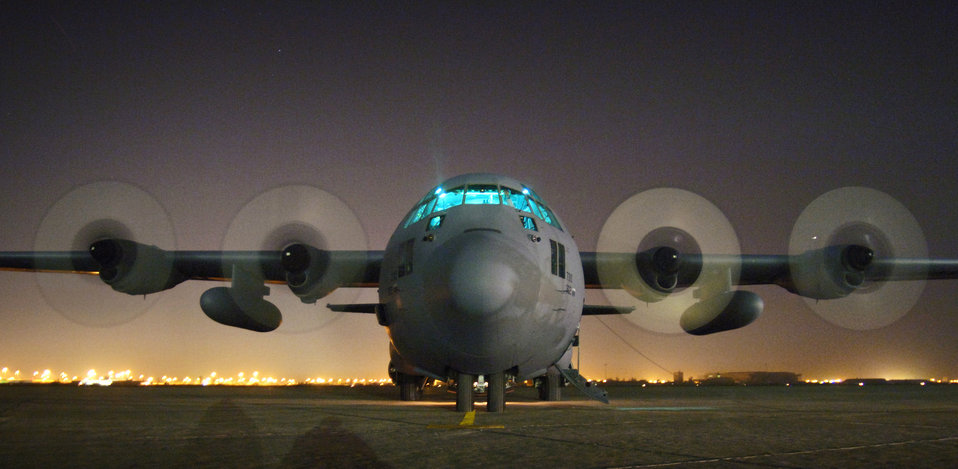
Combat support flight

An Air Force Reserve C-130 Hercules is readied for takeoff at Sather Air Base, Iraq, on Wednesday, April 19, 2006. The aircraft is from the 302nd Airlift Wing at Peterson Air Force Base, Colo.